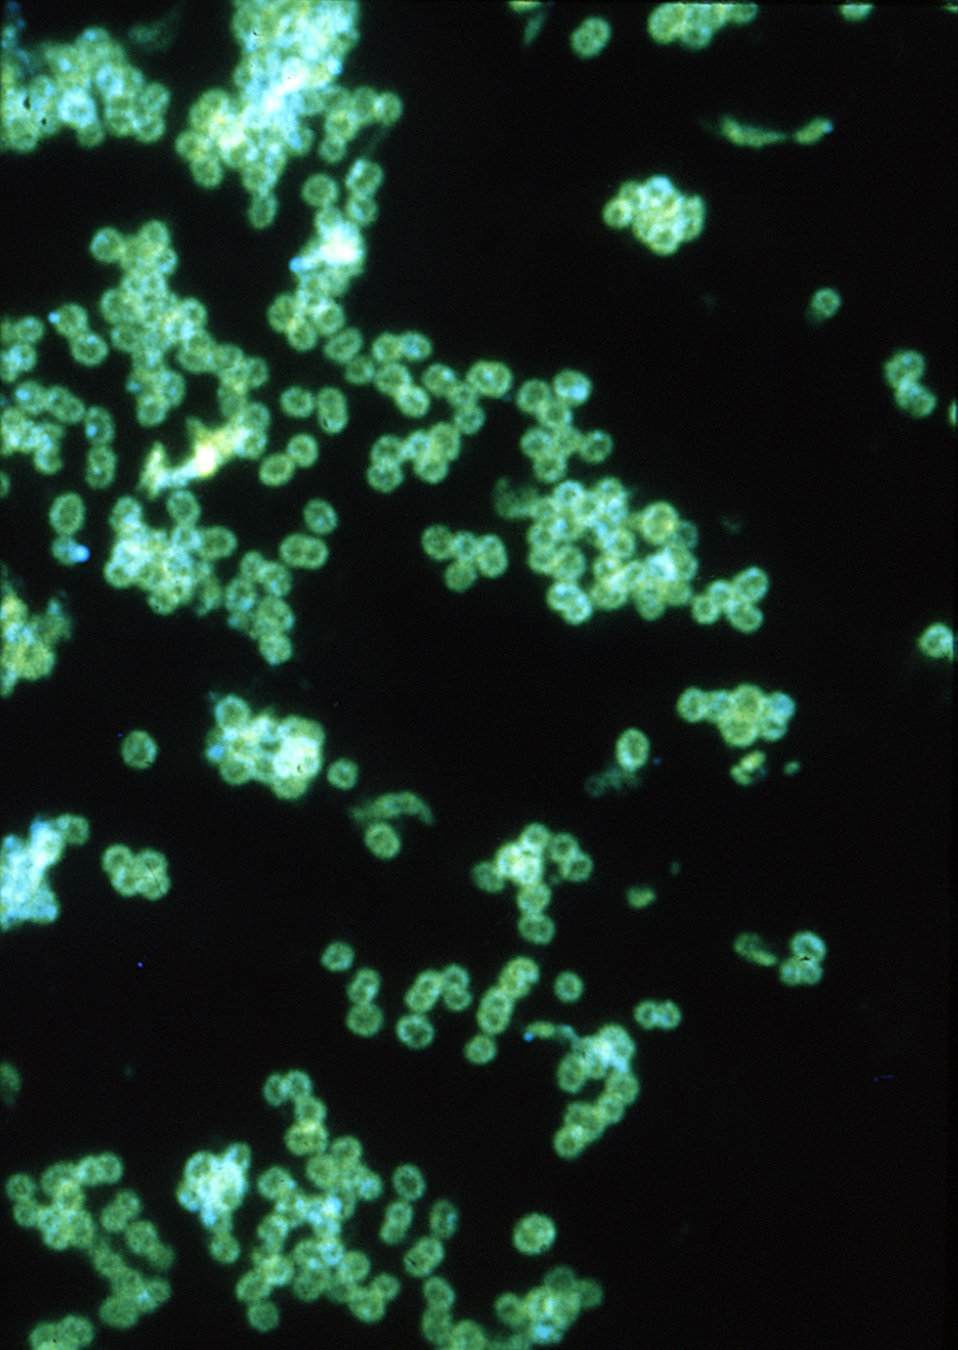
This fluorescent antibody-stained micrograph depicts a positive result testing for the presence of gonorrhea.